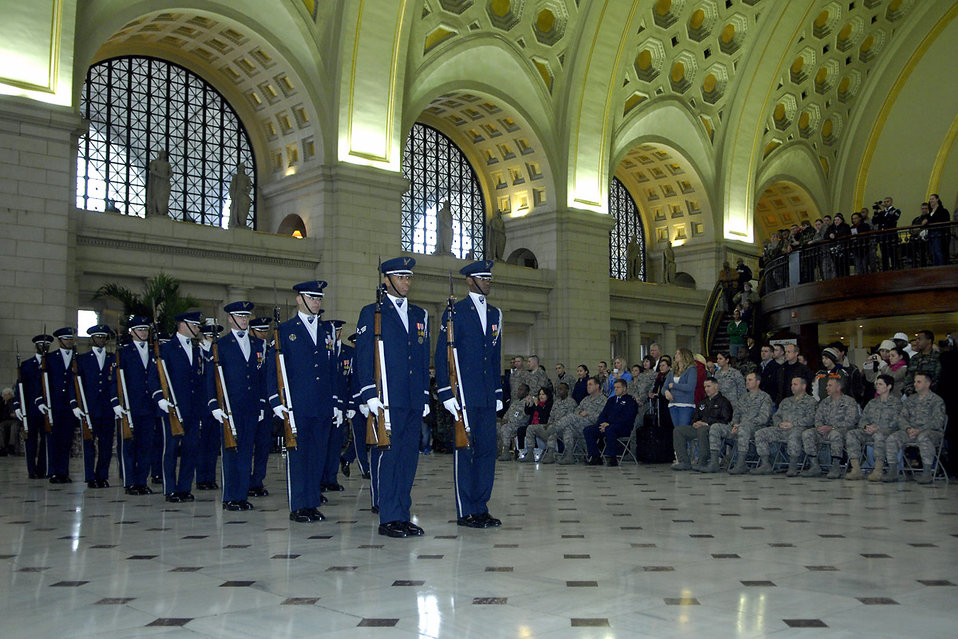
Air Force drill team kicks off 2008 season in D.C.

Air Force Honor Guard Drill Team members march in to perform their season unveiling Feb. 21 at Union Station in Washington, D.C. The unveiling drill is the first drill of the year before the team begins touring and the formal presentation of the 2008 team to Air Force leadership and the general public. The drill team is the traveling component of the Air Force Honor Guard and tours Air Force bases worldwide showcasing the precision of today's Air Force to recruit, retain and inspire Airmen for the Air Force mission.